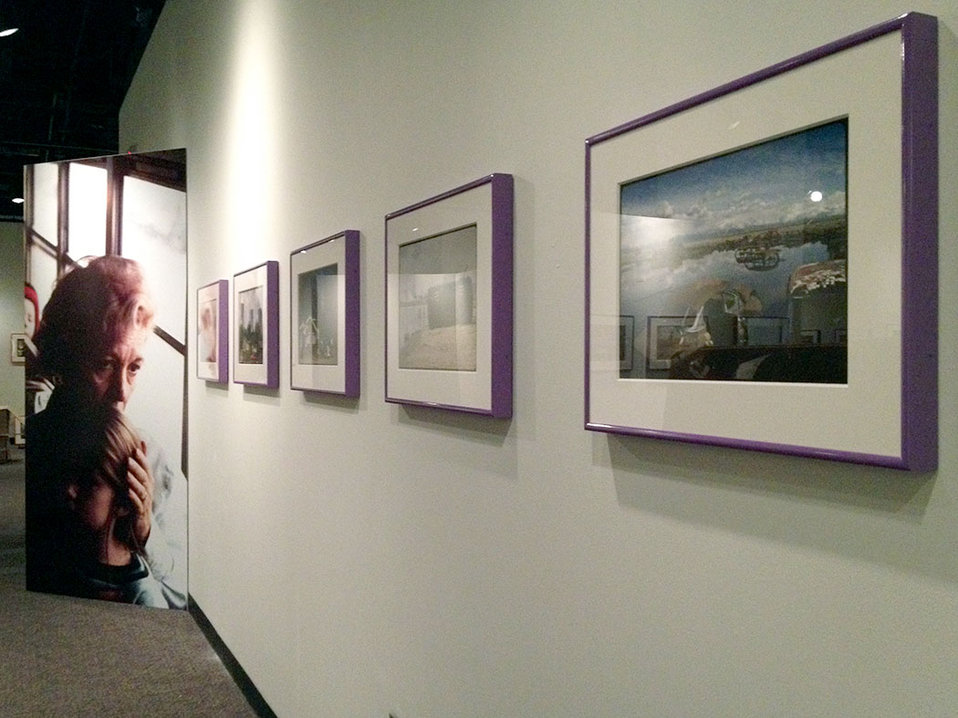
Documerica Photos and Mural

Framed exhibit photos and photo wall mural just installed for the 'Searching for the Seventies' exhibit in the O'Brien Gallery.